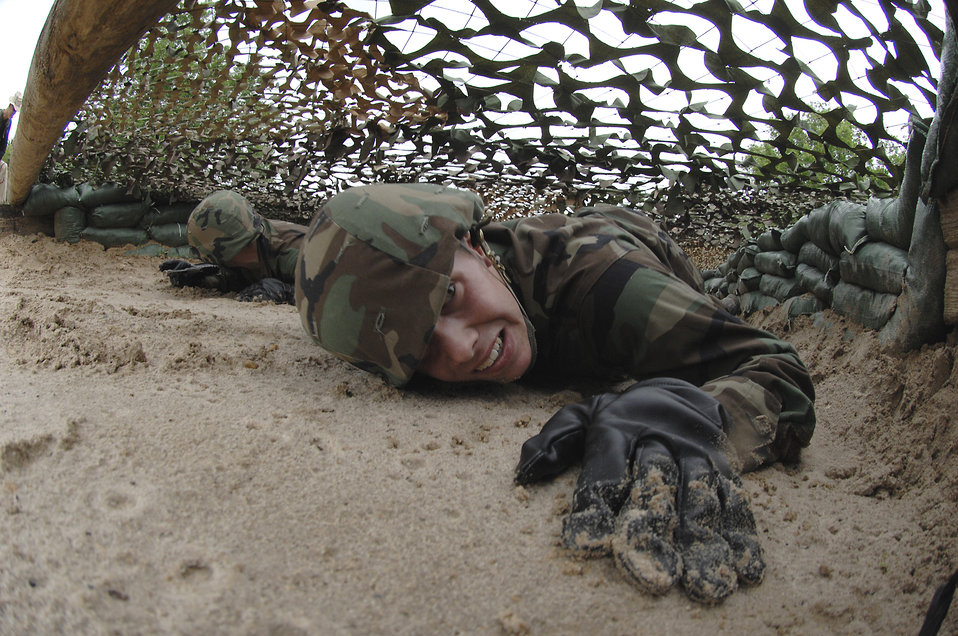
Airmen live, learn warrior ethos

A basic trainee low crawls through the first obstacle of the tactical assault course at the field training site on Lackland Air Force Base, Texas on May 2. This half-mile course, consisting of numerous obstacles, tests the trainees' newly-acquired defensive tactics skills and enforces the need to properly communicate with their wingmen.